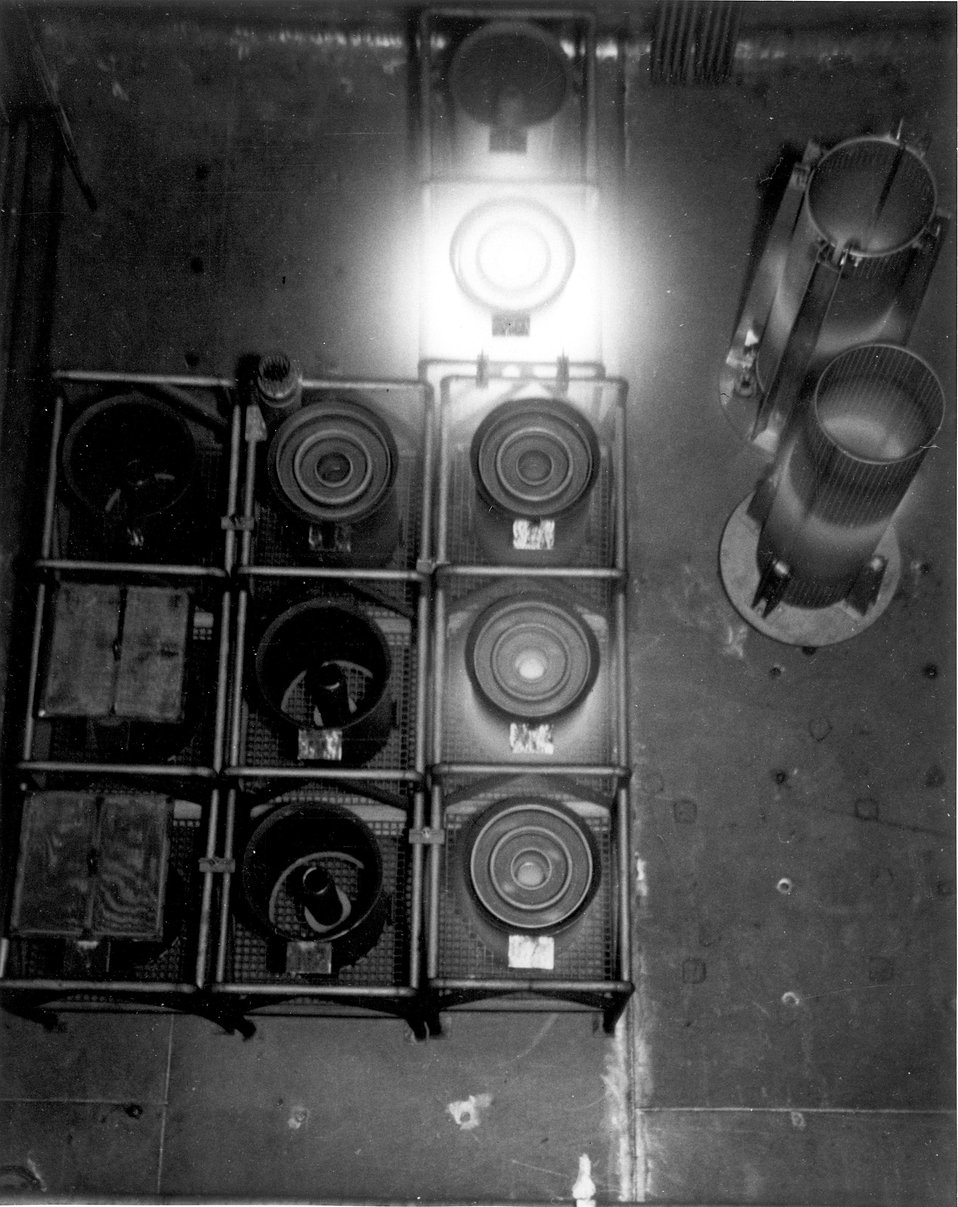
The High Flux Isotope Reactor reached full design power of 100,000 KW on September 9, 1966. c. 1967